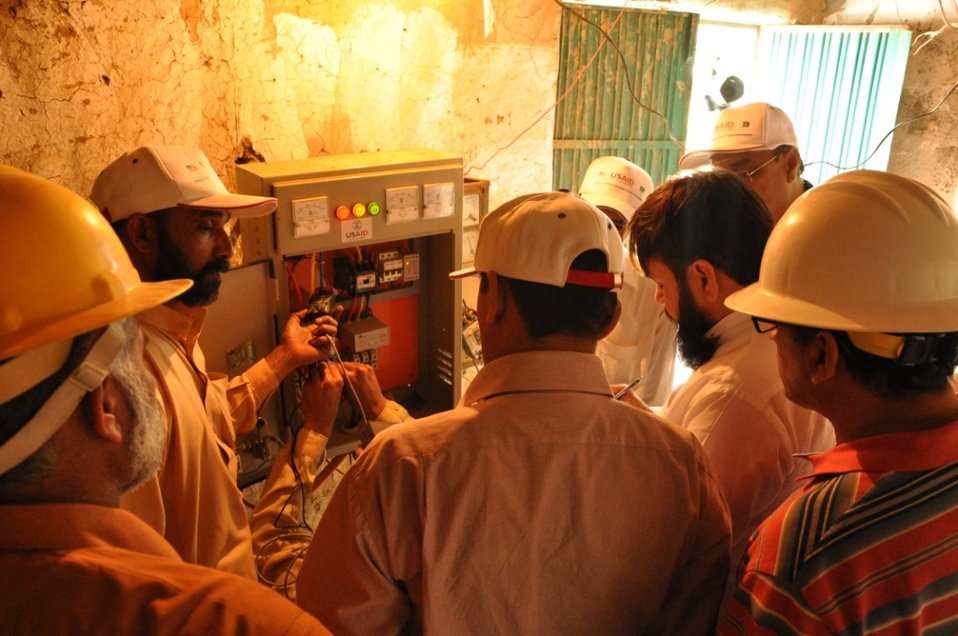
Usaid To Provide Technical Assistance To Improve Efficiency Of Tube-Wells In Iesco By Installing 2600 Lt Capacitors at Islamabad on April 26, 2012